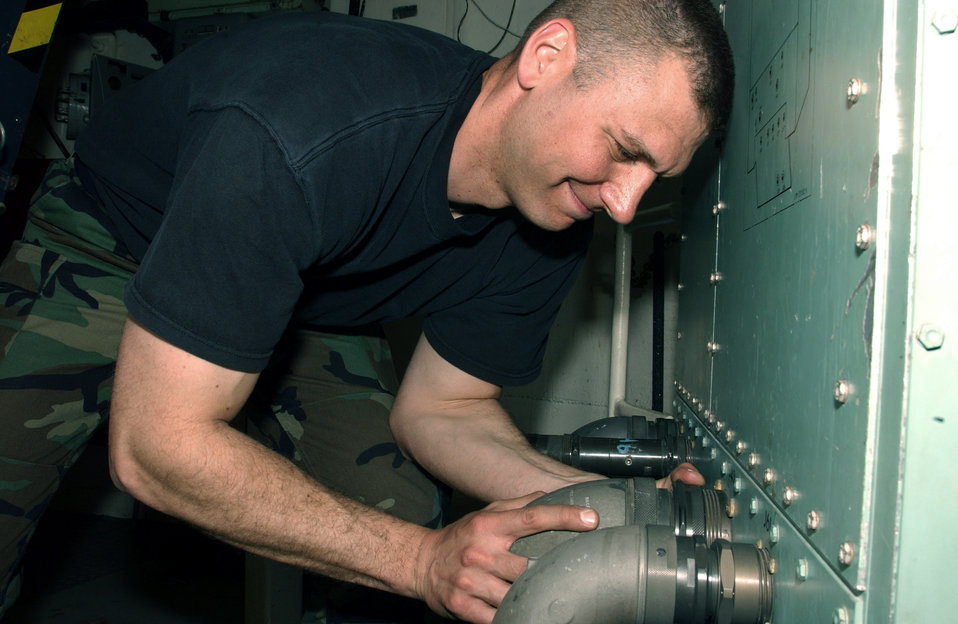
The 'Challenge' continues

VANDENBERG AIR FORCE BASE, Calif. -- Staff Sgt. Brian Belam tightens down a silo power cable during the missile maintenance team exercise, a Guardian Challenge event. Sergeant Belam is part of a team from the 91st Space Wing at Minot Air Force Base, N.D. Guardian Challenge takes place here May 2 to 6 and tests the wartime readiness of teams representing each missile and space wing unit from Air Force Space Command. Competition events include timed exercises in missile-crew operations, missile and space maintenance, spacelift operations, space and missile communications, missile code controllers, helicopter operations, chefs and security forces.